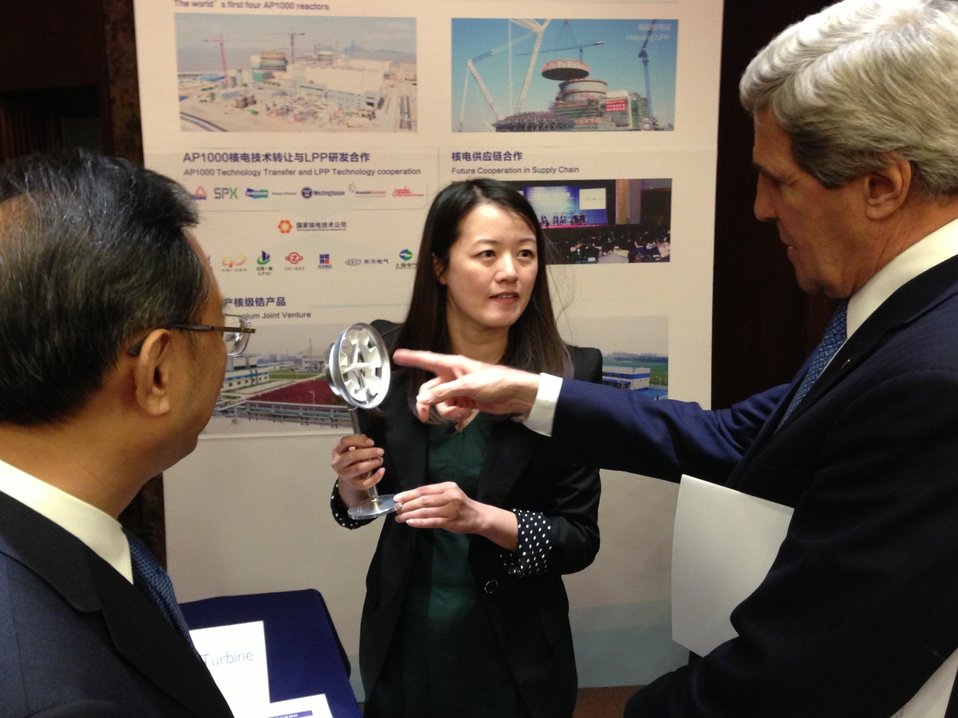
Secretary Kerry Tours Exhibit of Energy and Environmental Projects by U.S. and Chinese Companies

U.S. Secretary of State John Kerry and Chinese State Councilor Yang Jiechi explore interactive exhibits highlighting energy and environmental projects by U.S. and Chinese companies in Beijing, China, on April 13, 2013.